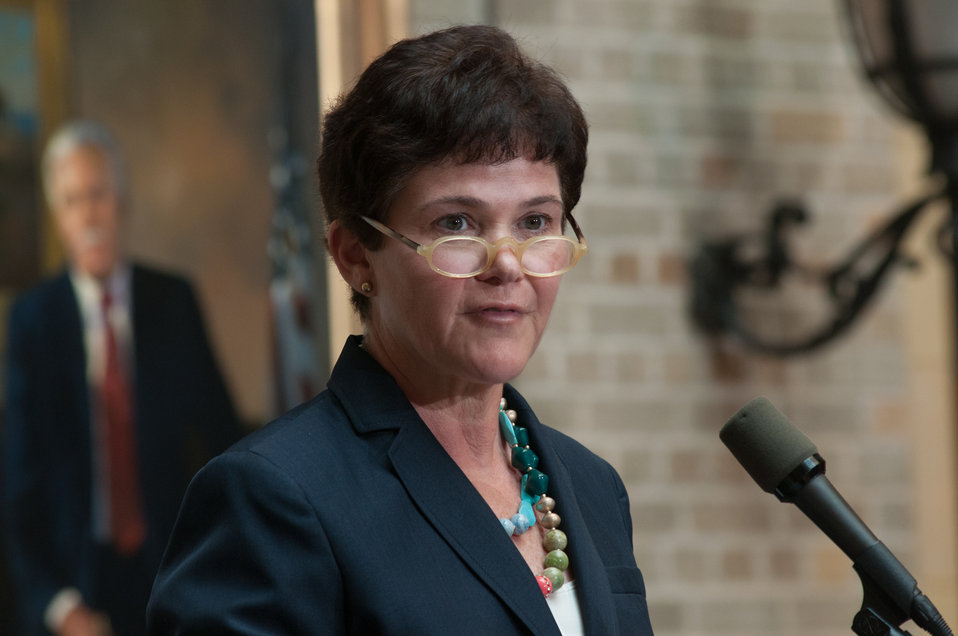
U.S. Department of Agriculture (USDA) Deputy Secretary Krysta Harden talks about the partnership agreement and five new grants for private, state and federal organizations that will work together to stimulate the development of additional wood energy projects in their states, during the Memorandum of Understanding (MOU) announcement and signing at the USDA Headquarters, in Washington, D.C., on Wednesday, September 11, 2013. Collectively, $2.9 million will be spent o this effort -- $1.1 million on federal funds and $1.8 million in non-federal funds.
The partnership agreement focuses on promoting wood energy nationwide as a means to address fire risks, bolster rural economic development, improve air quality, and help meet the Obama Administration’s renewable energy and energy efficiency goals. These organizations support the use of wood energy across the scale of users – from residential users, to commercial and intuitional facilities, to industrial production of heat and or electricity to drive businesses and feed the electrical grid.
Signing the MOU are Biomass Thermal Energy Council, Executive Director Joseph Seymour; Alliance for Green Heat, President John Ackerly, USDA Deputy Agriculture Secretary Krysta Harden; Pellet Fuels Institute Executive, Director Jennifer Hedrick; Biomass Power Association, President and CEO Bob Cleaves. For more information on the cooperative agreement program, visit na.fs.fed.us.werc/wood-energy/ USDA Photo by Lance Cheung.